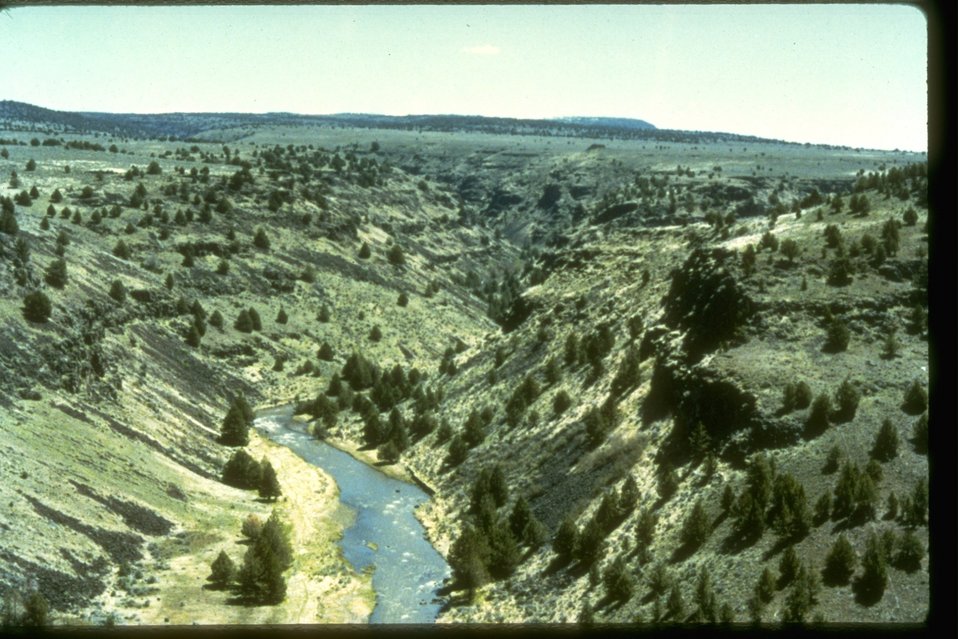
Aerial picture of Blitzen Gorge and the Blitzen River. OR 2-86E